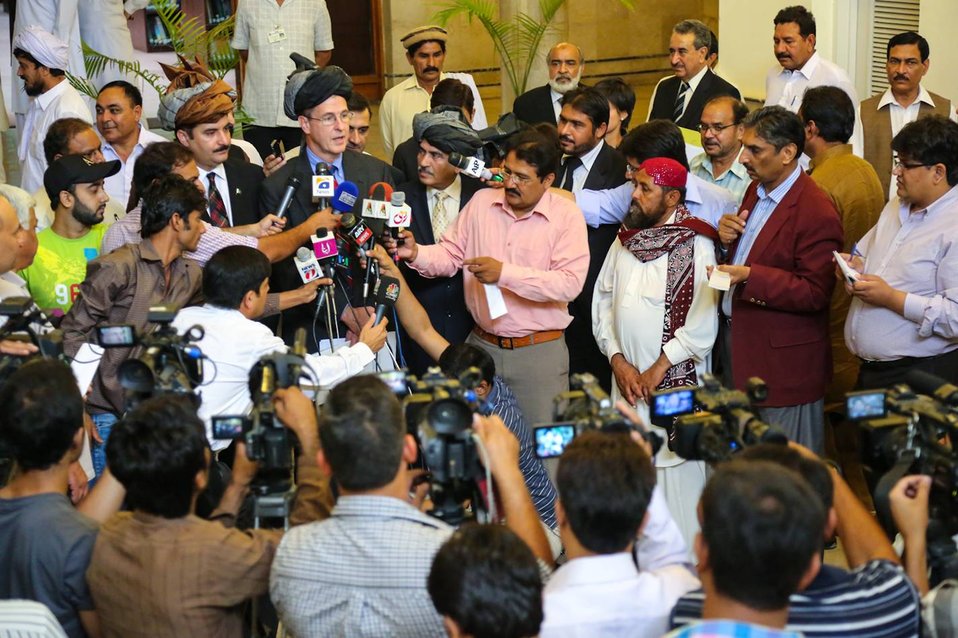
Islamabad, September 12, 2012 - Project Launch Ceremony of Waran Canal Irrigation System